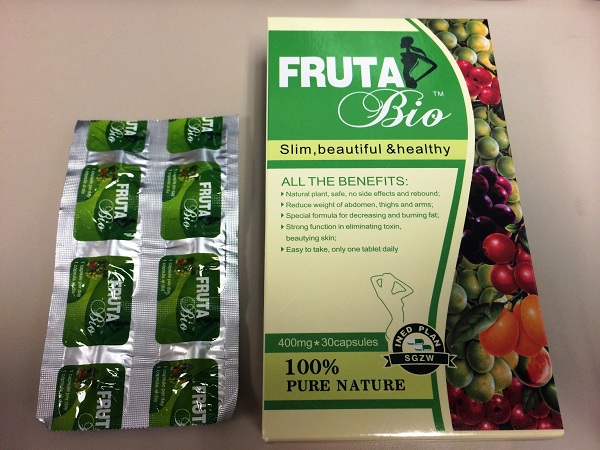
RECALLED - Reduce Weight Fruta Planta

February 4, 2014 – Product Recall – MyNicKnaxs, LLC. Issues a Voluntary Nationwide and International Recall of All Weight Loss Formulas of Reduce Weight Fruta Planta.